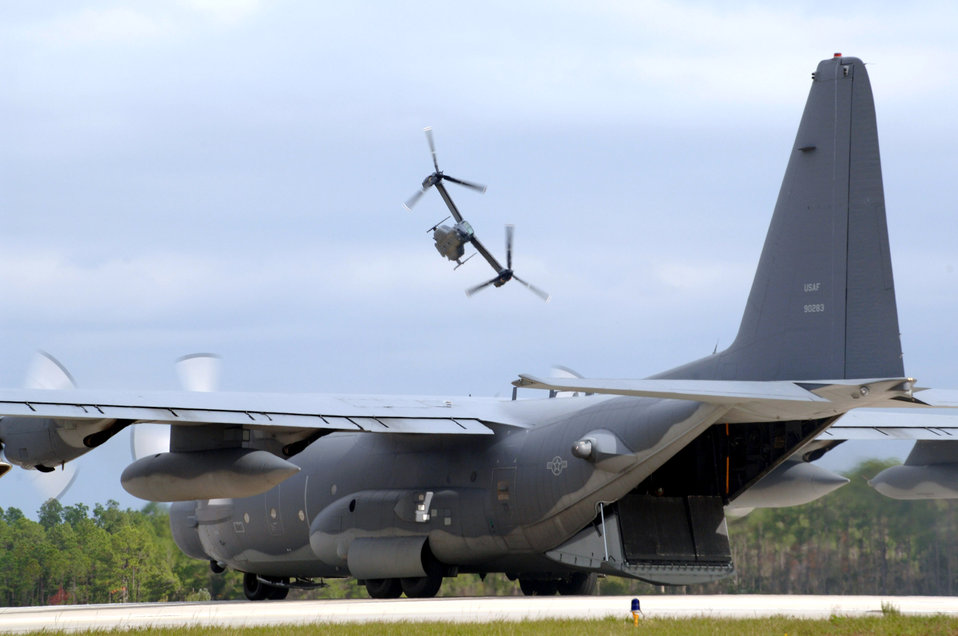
Heritage to horizons

A CV-22 Osprey flies over the Hurlburt Field, Fla., flightline Nov. 16 during its unveiling ceremony. The arrival of the CV-22 to Air Force Special Operations Command is part of Hurlburt Field's Heritage to Horizon commemoration.